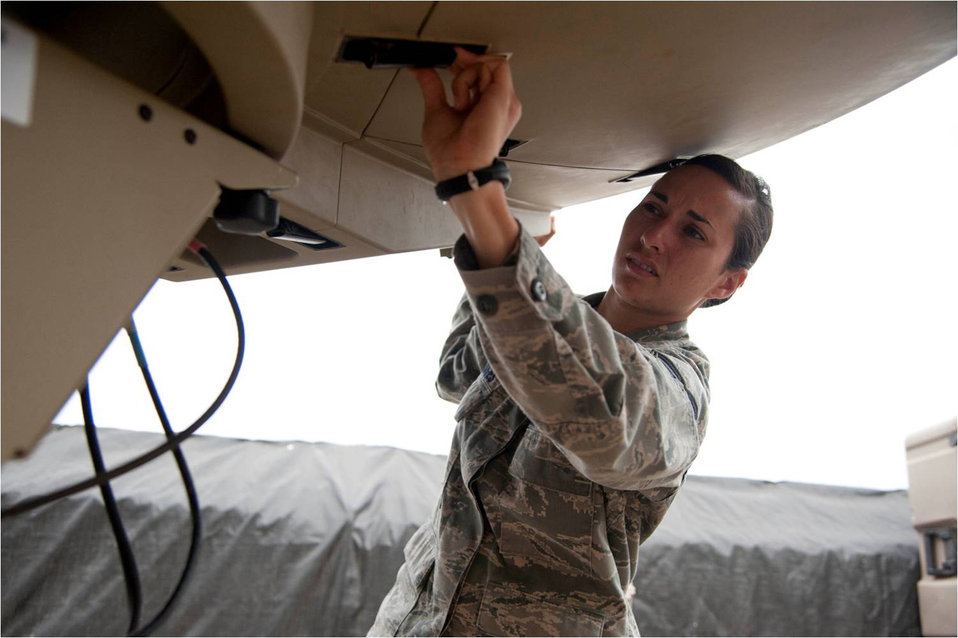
CJTF Horn of Africa

Staff Sgt. Jessica Hodges, a transmission systems technician with Combined Joint Task Force – Horn of Africa, maintains an access point satellite terminal here April 19, 2012. Technicians work at forward operating bases in the Horn of Africa to provide U.S. troops a secure medium for communications in support of CJTF-HOA missions.